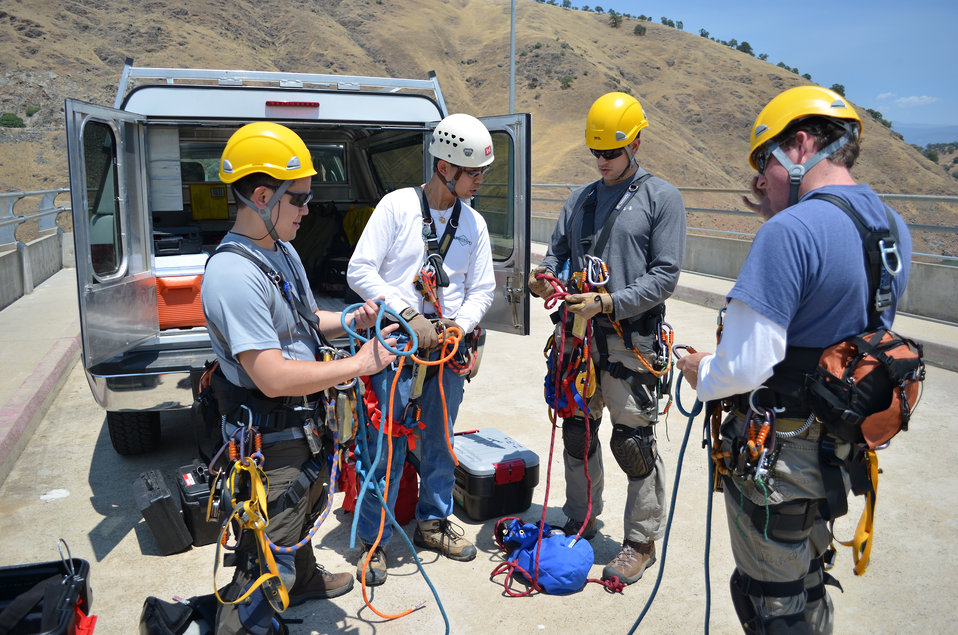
Engineers and climb team members with the U.S. Army Corps of Engineers Sacramento District

(From left) Tim Lee, Charles Jeung, Christopher Abela and Levi Bowers, engineers and climb team members with the U.S. Army Corps of Engineers Sacramento District, prepare ropes and climbing equipment before an inspection of the tainter gates at Pine Flat Dam near Fresno, Calif., June 17, 2013. Inspections are conducted every five years and are necessary to identify any issues early and ensure the dam continues to offer multiple benefits to the public. Tainter gates are a type of flood gate used in dams to control water flow. Pine Flat Dam reduces flood risk to Fresno County and stores water used for water supply and hydroelectric power.